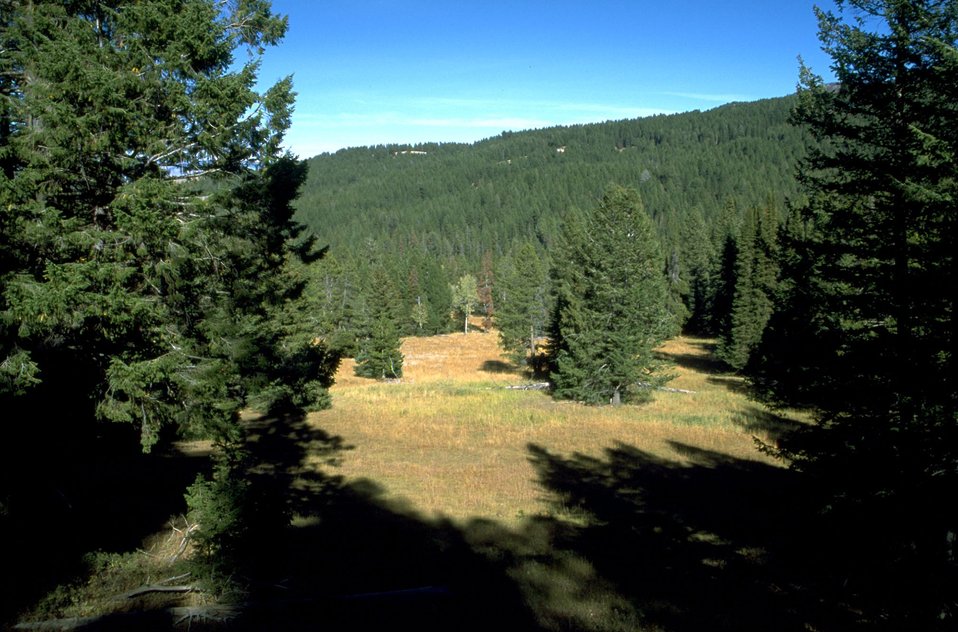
Meadow opening among forested area